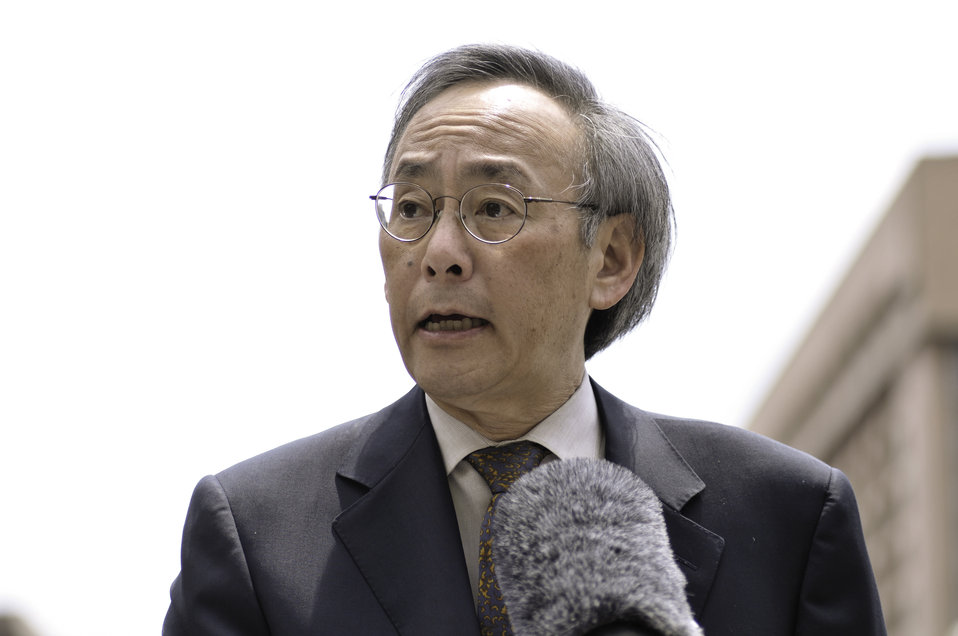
Clean Fleets Announcement 6 of 14

Sec. Steven Chu, US Department of Energy speaks at a Clean Fleets event held at the Department of Energy.